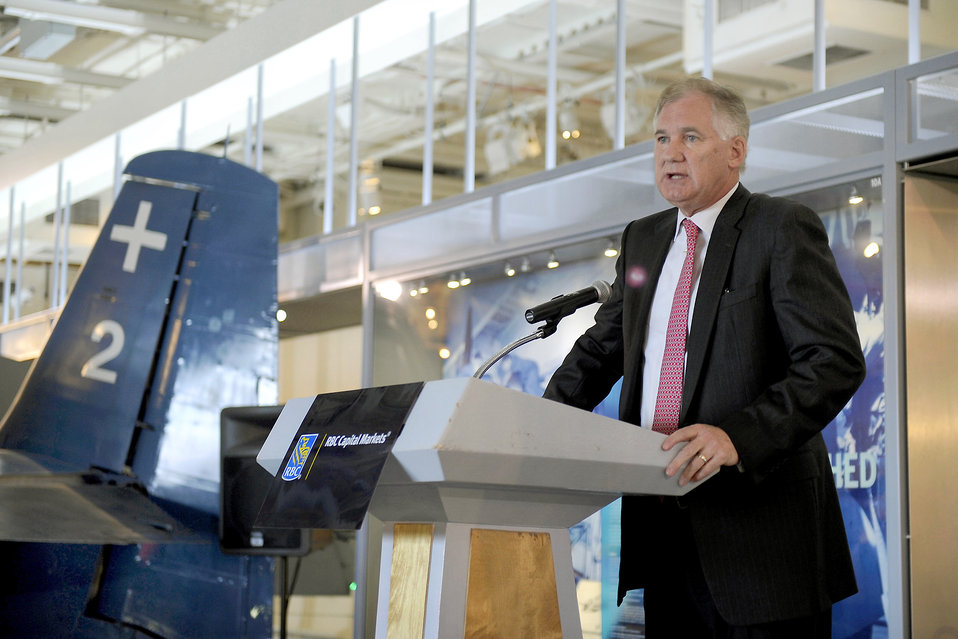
Lynn: U.S. must preserve its defense industrial base

Deputy Defense Secretary William J. Lynn III addresses the audience at the Royal Bank of Canada Defense and Aerospace Conference in the hangar deck of the USS Intrepid Sea, Air and Space Museum May 11, 2011, in New York.